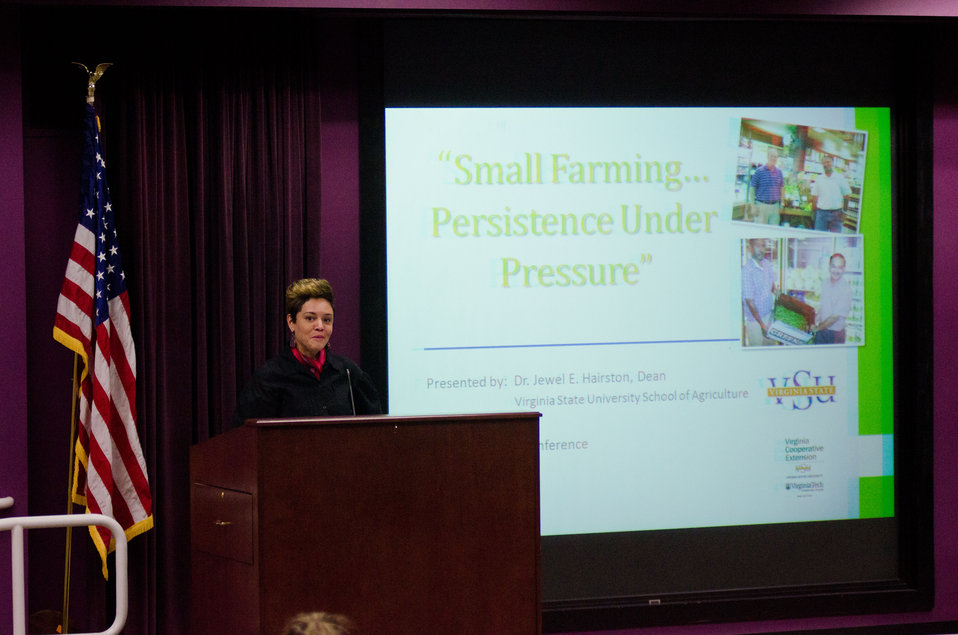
Virginia State University (VSU), School of Agriculture Dean Dr. Jewel E. Hairston was the keynote speaker for the 'VSU, U.S. Department of Agriculture (USDA) and Virginia Farmers Working Together” outreach workshop in the VSU, L. Douglas Wilder building on Thursday, March 7, 2013, in Petersburg, VA. Her topic was 'Small Farming - Persistence Under Pressure.'